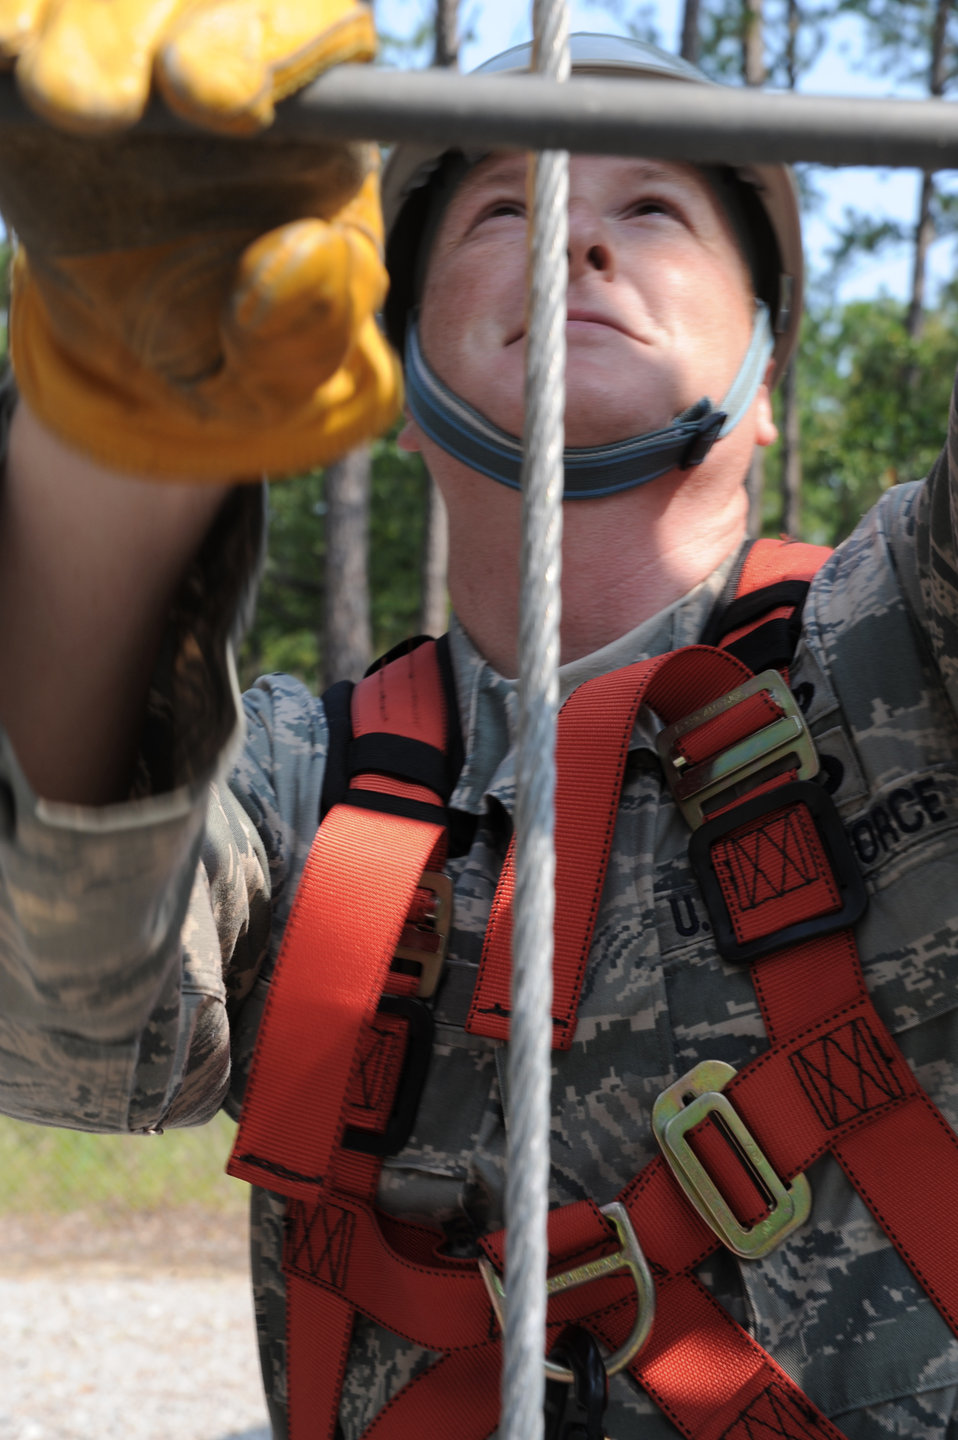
Airmen climb a radio tower

Staff Sgt. John Kingsley prepares to climb a radio frequency tower June 14, 2011, during a training exercise at Joint Base Charleston, S.C. Sergeant Kingsley is a radio frequency transmissions systems craftsman assigned to the 628th Communications Squadron.